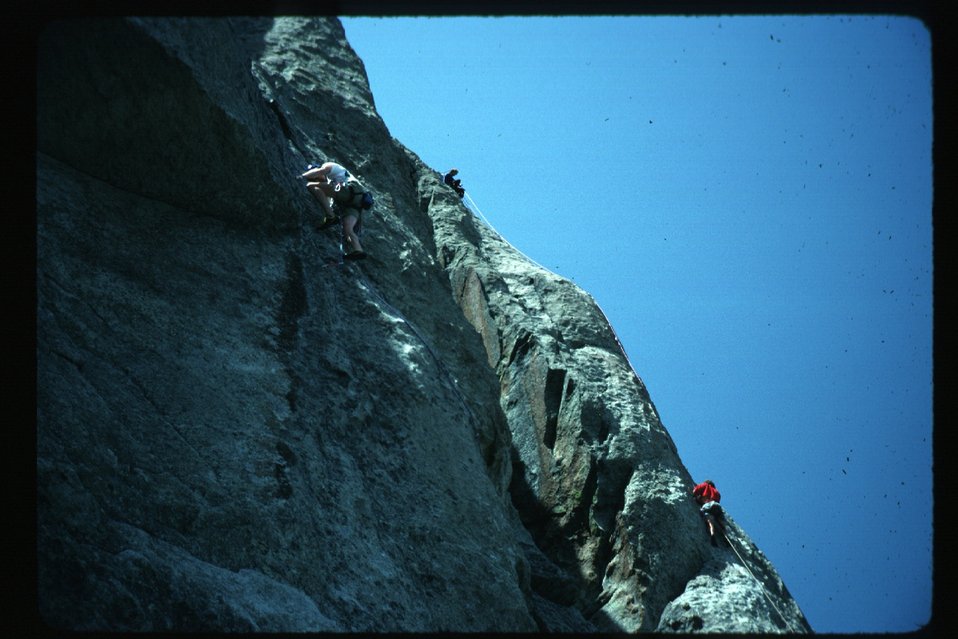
City of Rocks Rock Climbing Geology Burley Field Office USRD Upper Snake River District